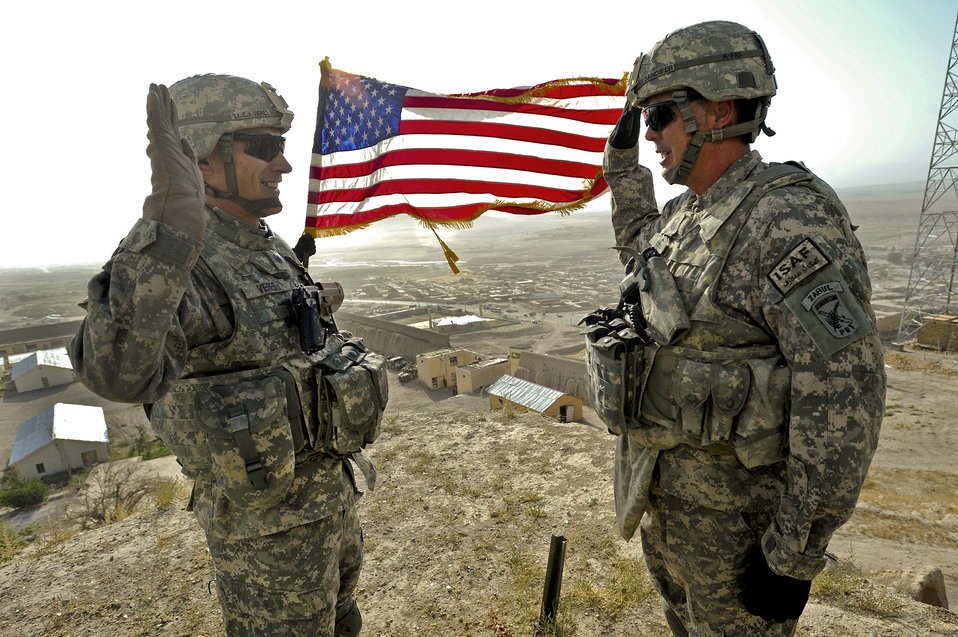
Staying with the Force

Lt. Col. Andy Veres (left), the Provincial Reconstruction Team Zabul commander, re-enlists Master Sgt. James Sandifer, the Forward Operating Base Smart mayor, July 7, 2011, on top of Alexander's castle in Qalat City, Afghanistan.